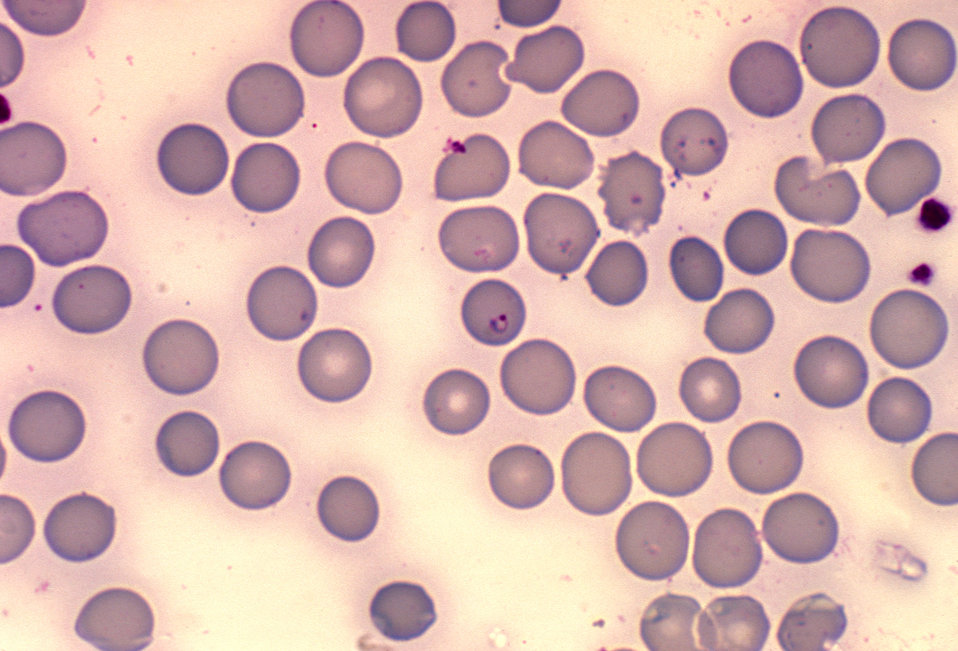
Babesia microti in blood smear. Giemsa stain. Parasite.